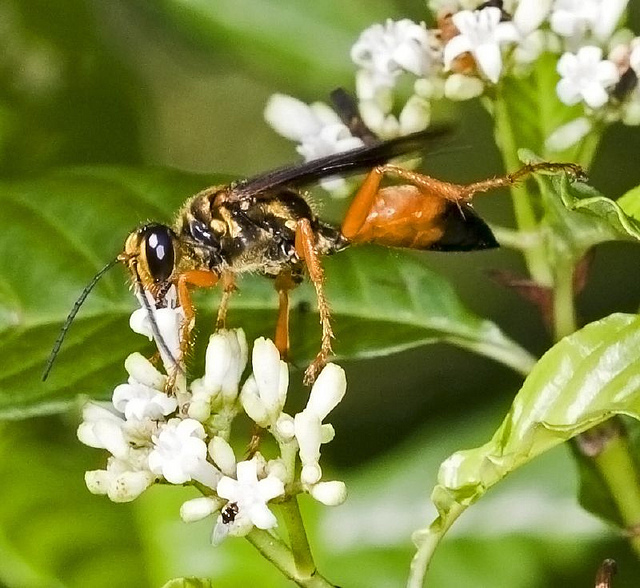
great golden digger wasp

Loxahatchee National Wildlife Refuge, FL